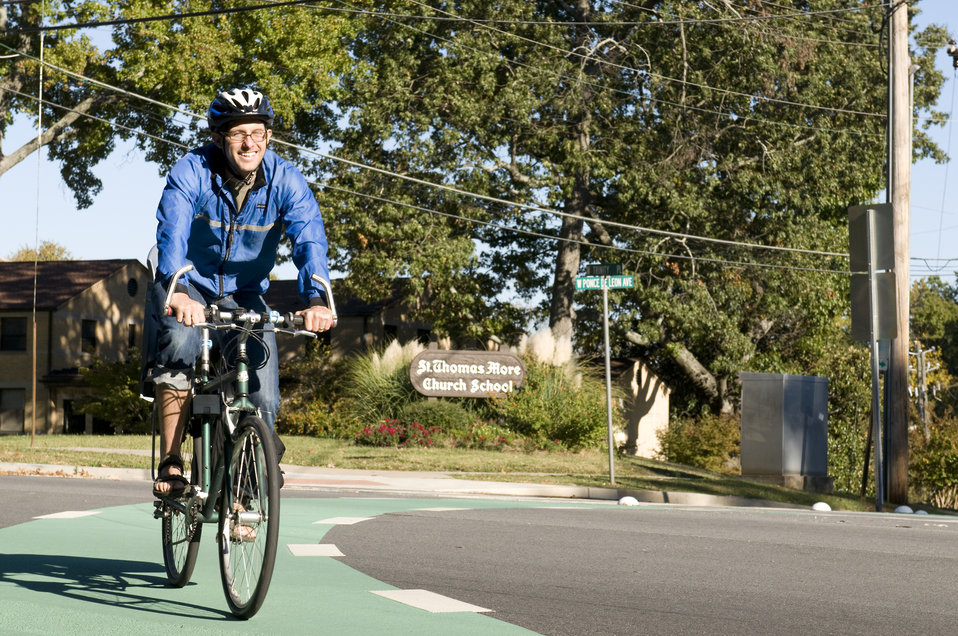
This photograph depicts a smiling male bicyclist, who was riding his bicycle on a sunny Georgia morning. Note the brightly-colored windbreaker he was wearing, which would help drivers see him more easily, as well as the protective, aerodynamic helmet, and the snug leggings, all adding to an overall safer bike ride. Also important, is that he was riding in the designated bicycle traffic lane, and abiding by the proper rules of the road, which govern drivers of both bicycles, and motorized vehicles.